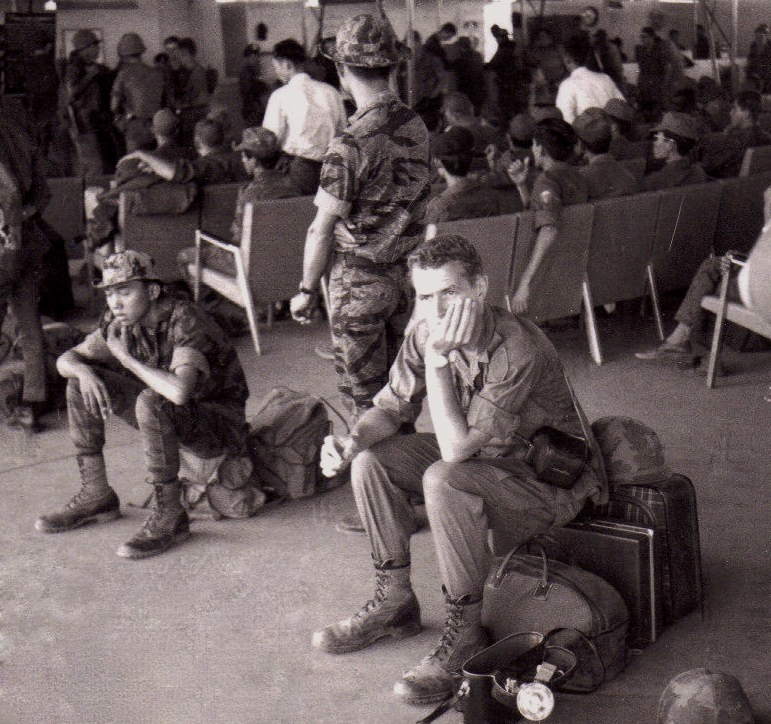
Mike Crocker in Region 6 served as a Specialist 5 in the Army during Vietnam.